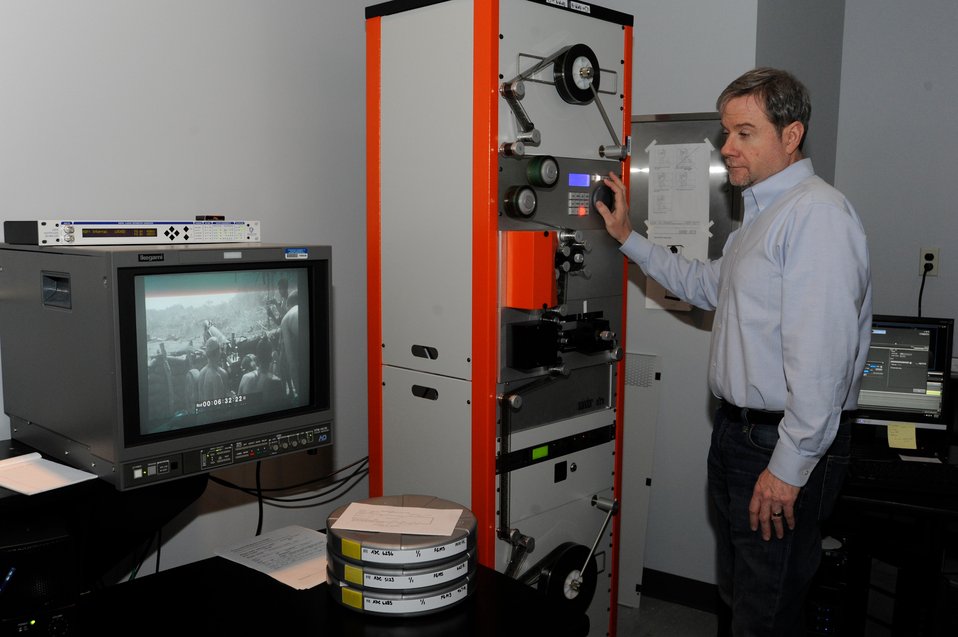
Harry Snodgrass is setting up the Altra for an HD transfer.; Location: Archives 2 - Motion Picture Preservation Lab, College Park, MD